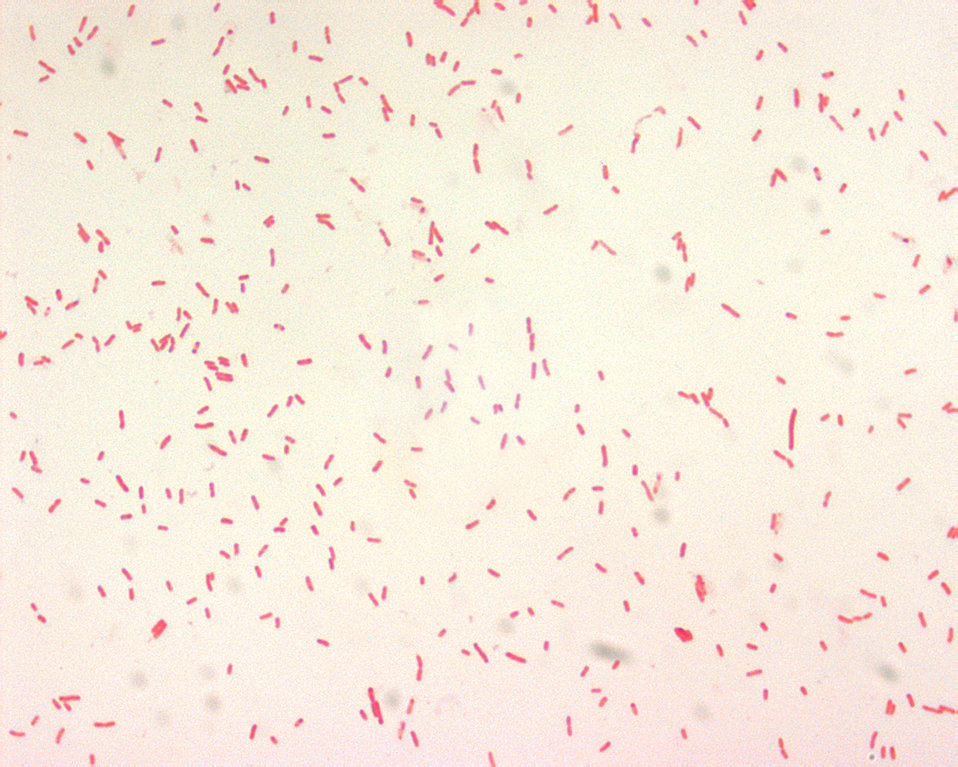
Yersinia pestis, Gram-negative bacillus.